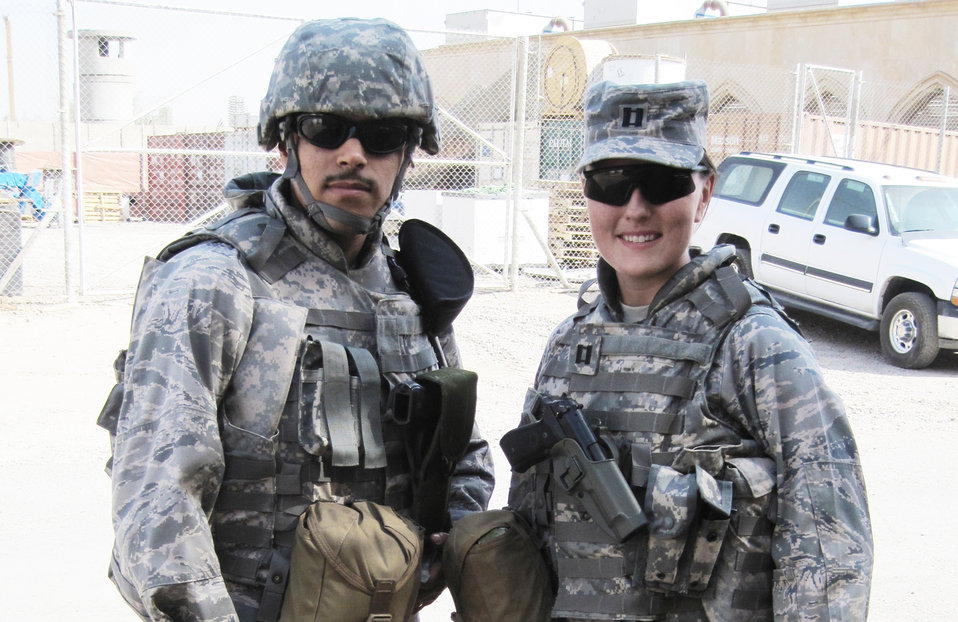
For legal officer, there?s ?no such thing as a traditional deployment?

Capt. Maureen Wood, right, stands with fellow legal officer Capt. Jaime Espinosa prior to a mission in Iraq. Captains Wood and Espinosa are assigned to Multinational Force-Iraq Joint Task Force 134.